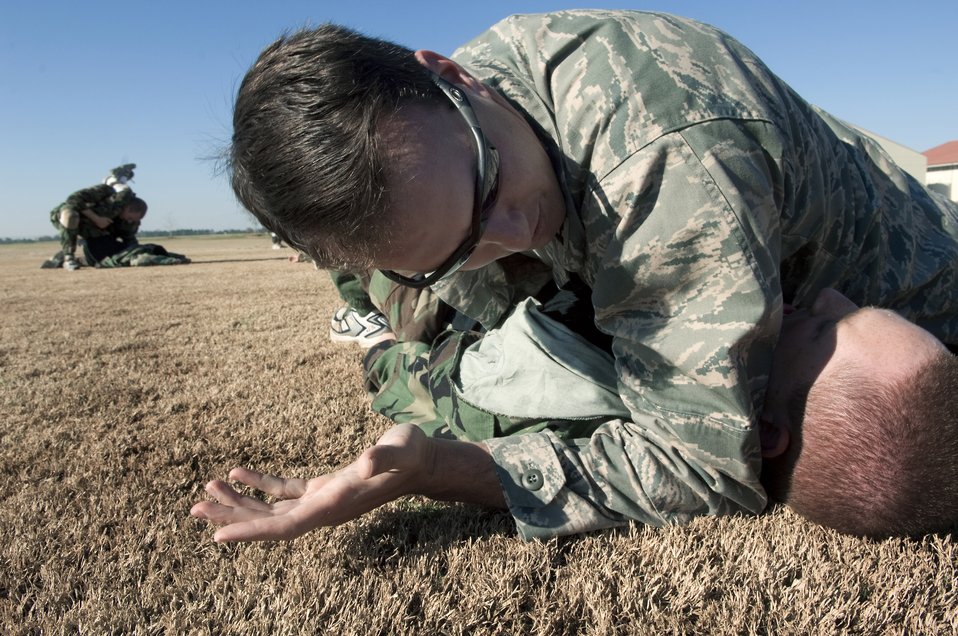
OTS begins new close combat course

Capt. George Hemingway, an Officer Training School flight commander, takes a hands-on instructing approach with an officer trainee Feb. 8 during the new Air Force Combative Program field exercise at Maxwell Air Force Base, Ala. All officer accession students are being given 11 hours of combative-skills training. Trainees learn ground fighting and basic jujitsu-style grappling moves to provide them with the confidence they need to defend themselves in combat situations.